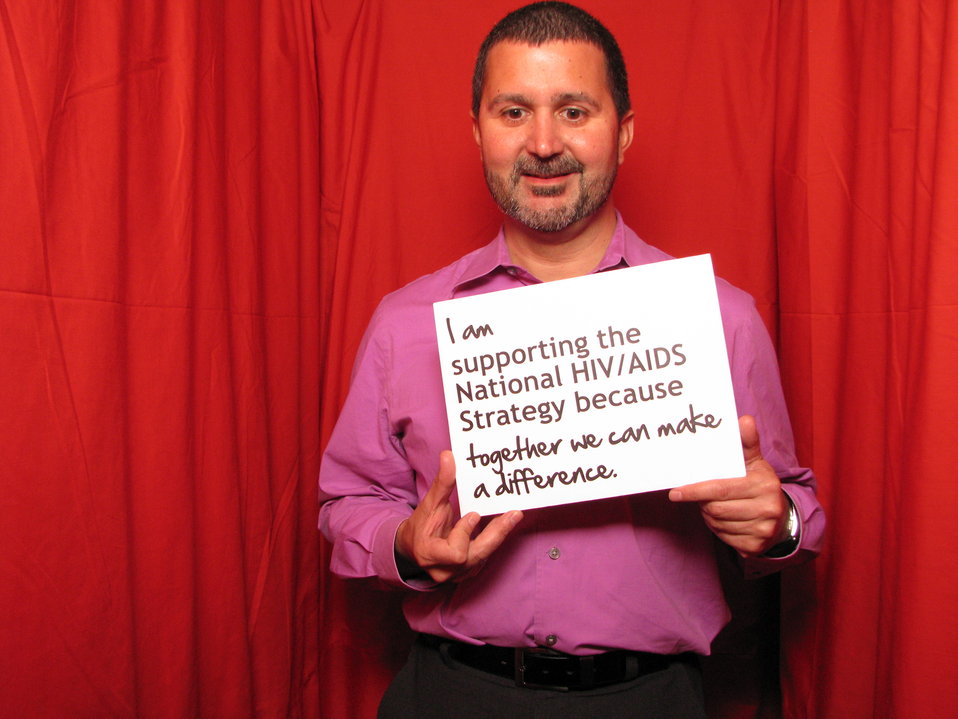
I am Supporting the National HIV/AIDS Strategy because Together We Can Make a Difference

From the AIDS.gov photo booth at the U.S. Conference on AIDS, September 2010 (Orlando, FL).